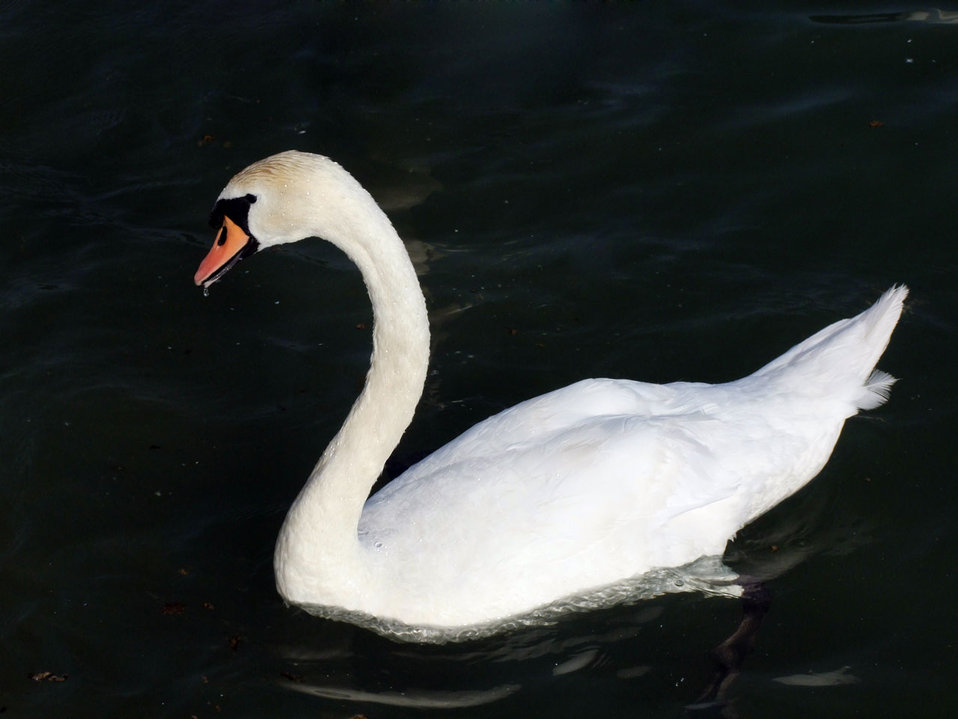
Swan

He wanted to be photographed.